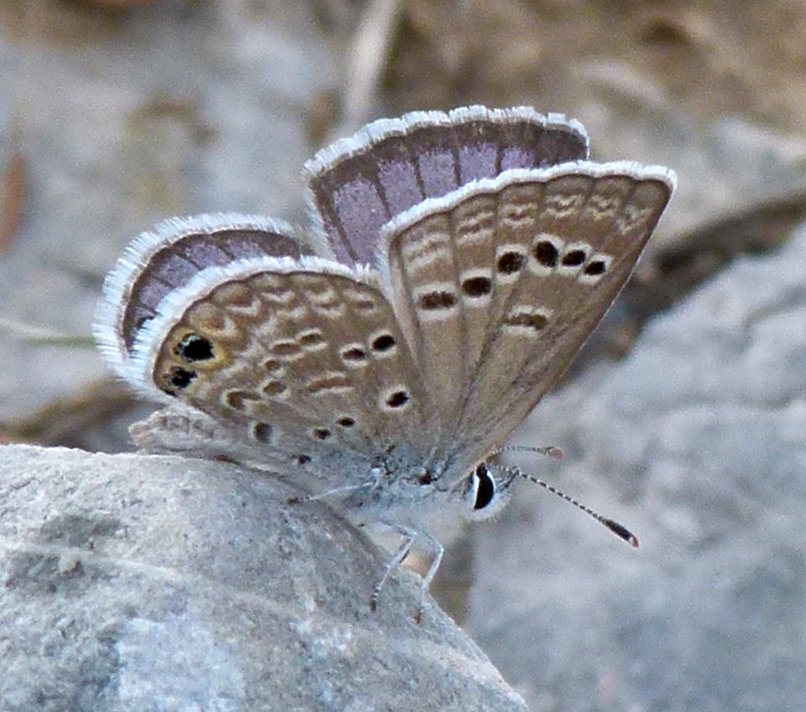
Reakirt's Blue (Echinargus isola)